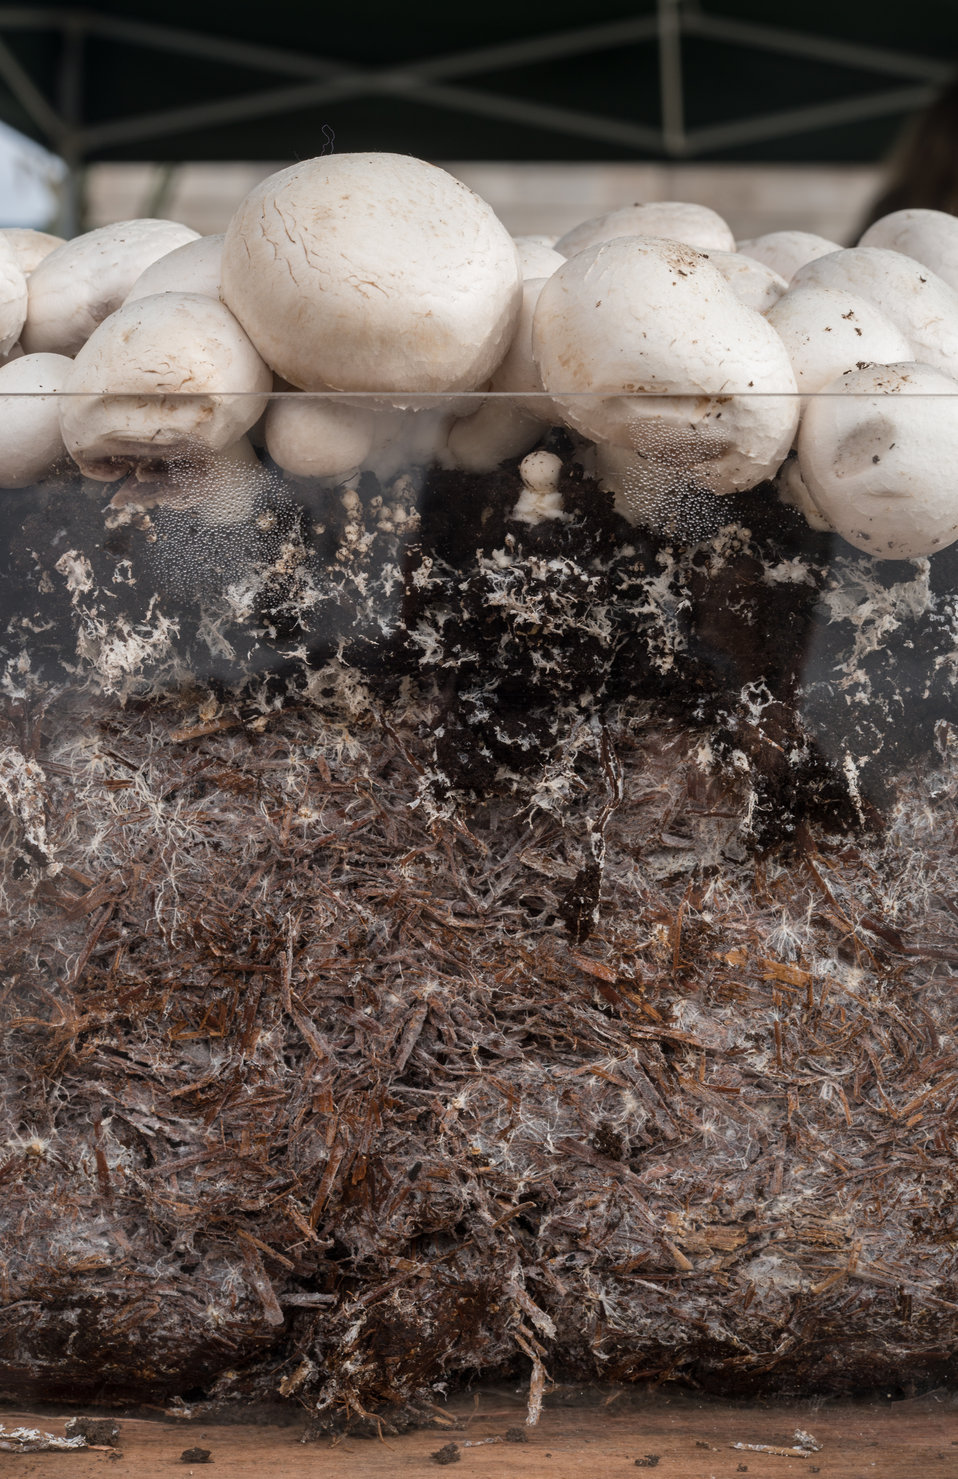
White button mushrooms on display at the U.S. Department of Agriculture (USDA) farmers markets and Harvest Festival at the USDA Whitten Building east parking lot in Washington, DC, on Friday, November 22, 2013.